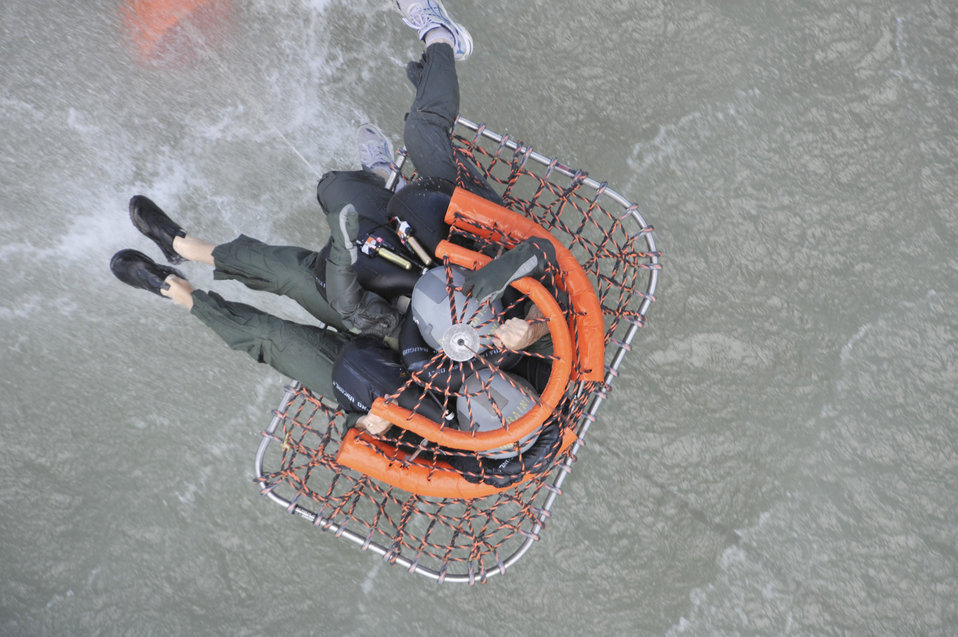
Air Guard flight crews undergo water survival training

Two pilots from the Texas Air National Guard's 149th Fighter Wing in San Antonio are raised out of the water during refresher aircrew water survival training at Canyon Lake near San Antonio. Army National Guard UH-60 crews from the 149th Aviation Regiment in San Antonio provided airlift support. The refresher training is mandatory for all aircrew members.